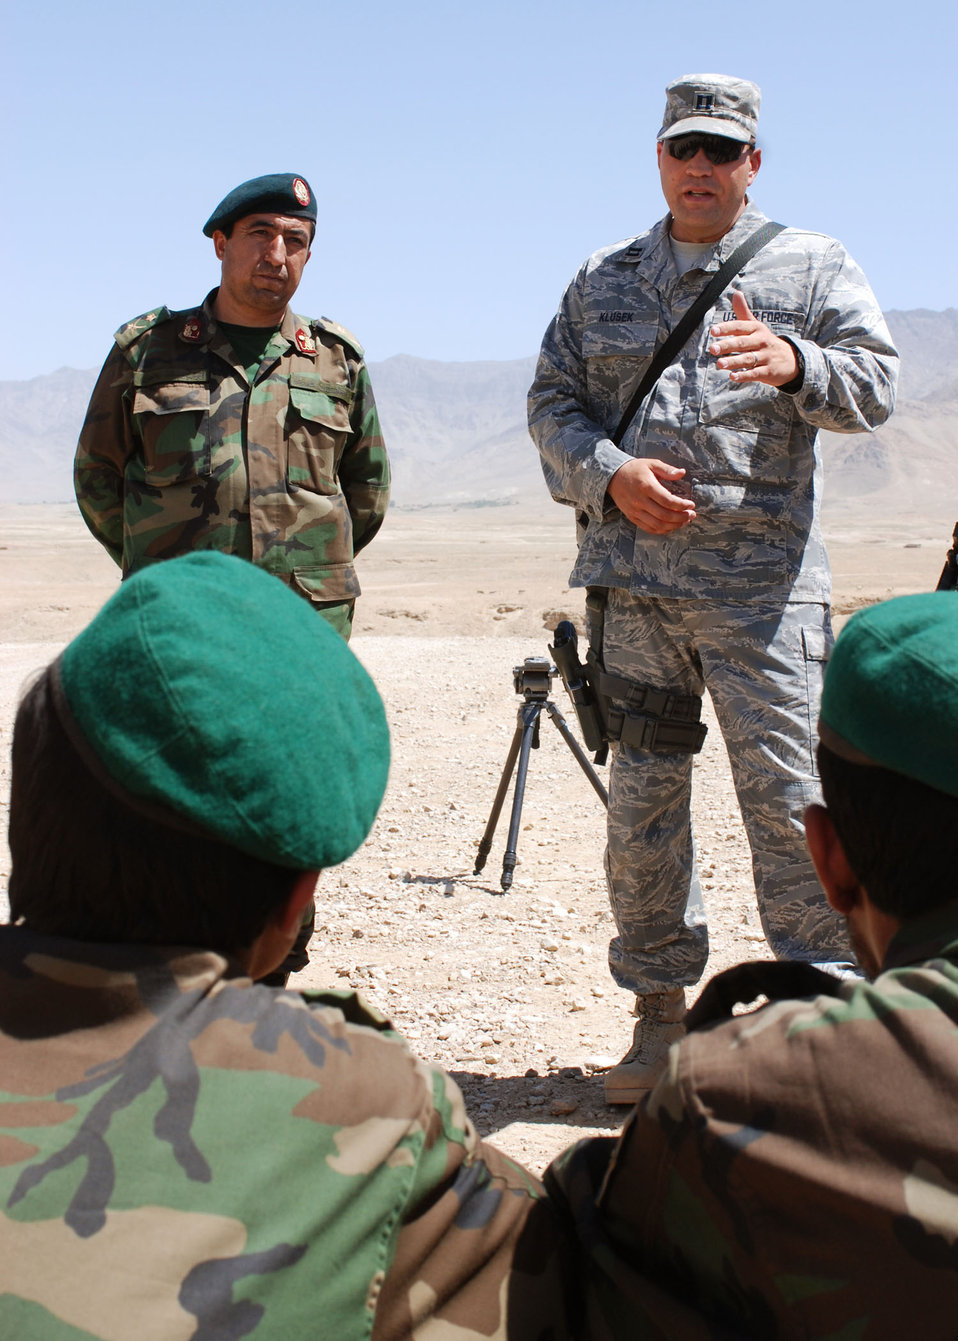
ANA soldiers master driving new Humvees

Capt. Todd Klusek explains a drivers' safety issue regarding Humvee rollovers to Afghan National Army soldiers during Humvee training at the Kabul Military Training Center in Kabul, Afghanistan. Captain Klusek serves as a combat service support senior mentor for the center's Humvee Driving course. Captain Klusek is deployed from of Dyess Air Force Base, Texas.